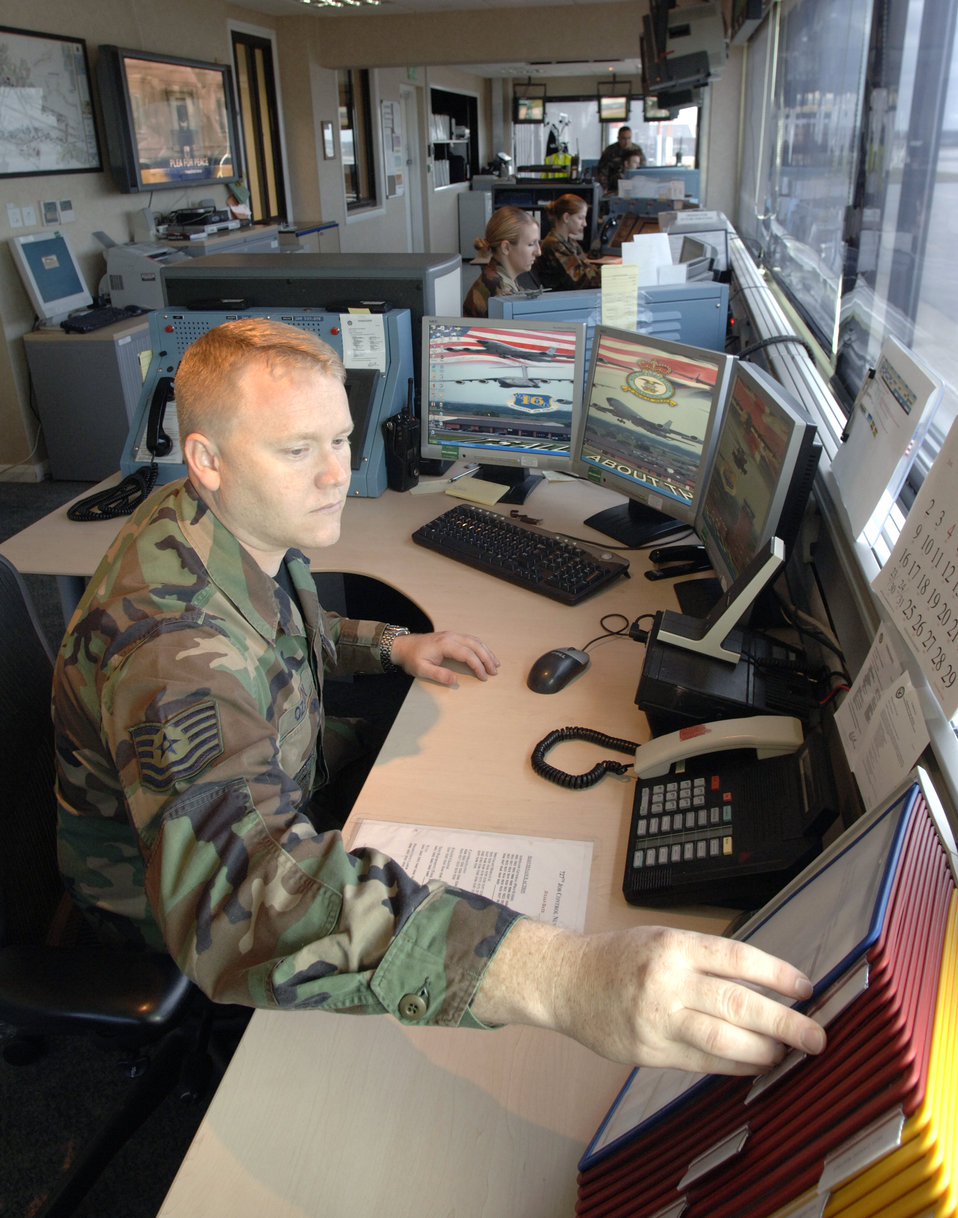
Aerial port Airmen make own training opportunities

Tech. Sgt. T.J. Ozbun and (left to right) Senior Airman Erica Wells, Airman 1st Class Laura Gazda, Staff Sgt. Dan Scruton and Tech. Sgt. Raymond Sanchez work at the combined maintenance operations and air terminal operations center at Royal Air Force Mildenhall, England, on July 31. The crew controls the movement of missions, passengers, cargo, aircraft and maintenance for transient aircraft at Mildenhall.